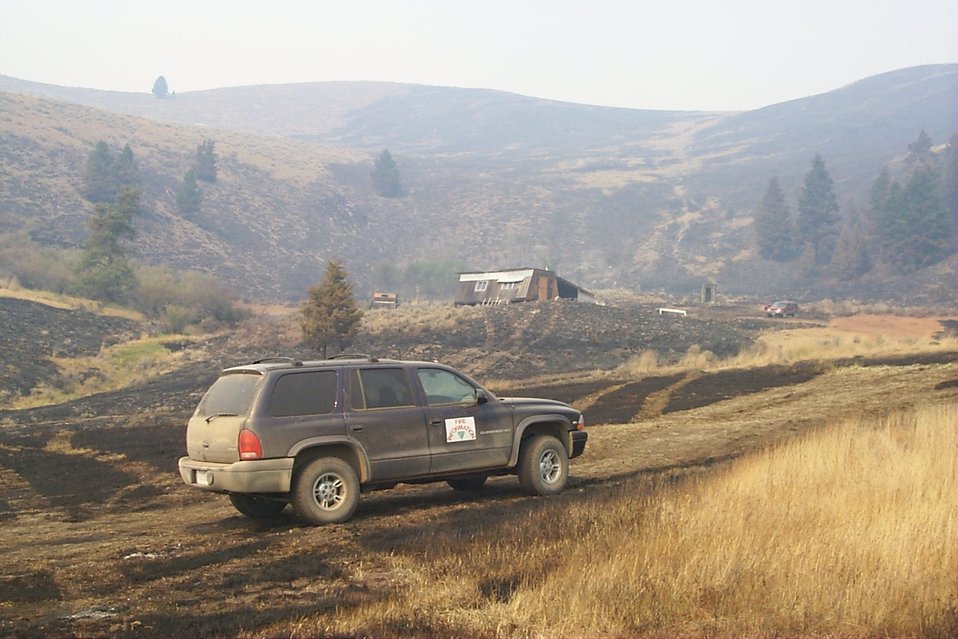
Urban interface Fire Clearwater Fire Salmon Field Office USRD Upper Snake River District